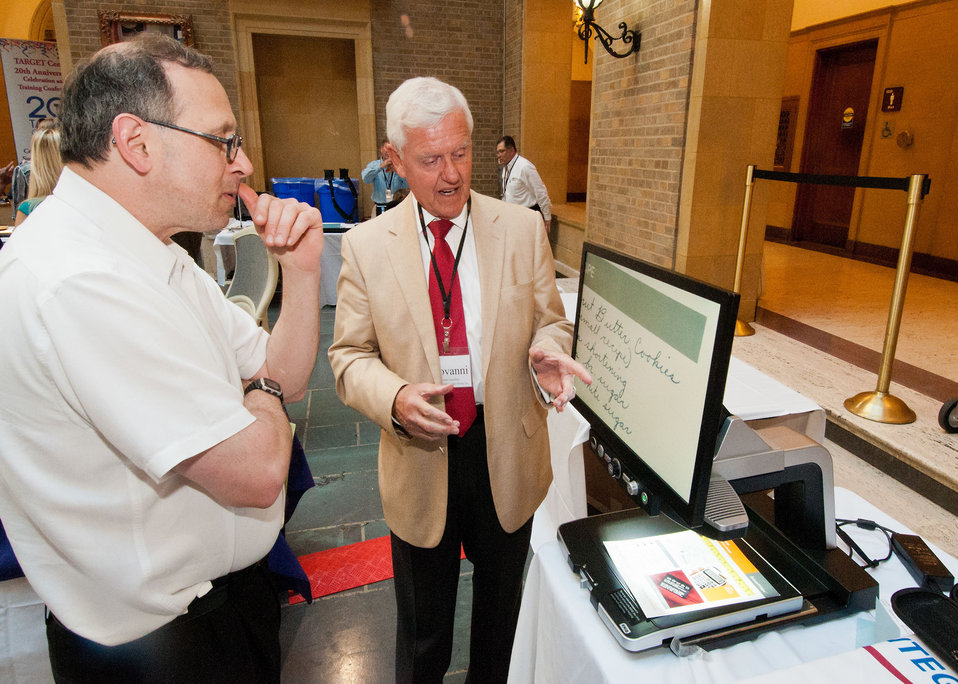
U.S. Department of Agriculture (USDA) Agricultural Marketing Service (AMS) Disabled Employees Program Manager Todd Birkenruth observes Integration Technologies Group representative Giovanni Canobbio demonstrate a Closed-Circuit TV (CCTV) Electronic Magnification Reading System for low vision users at USDA’s Departmental Management (DM) Target Center 20th Anniversary at USDA in Washington, D.C. on Thursday, Sept. 13, 2012. The USDA Target Center has provides Assistive Technology to employees with disabilities. The Center has assisted thousands of individuals with disabilities to further contribute to the mission of USDA. The Target Center has also partnered with the Department of Defense Computer/Electronic Accommodations Program (CAP).